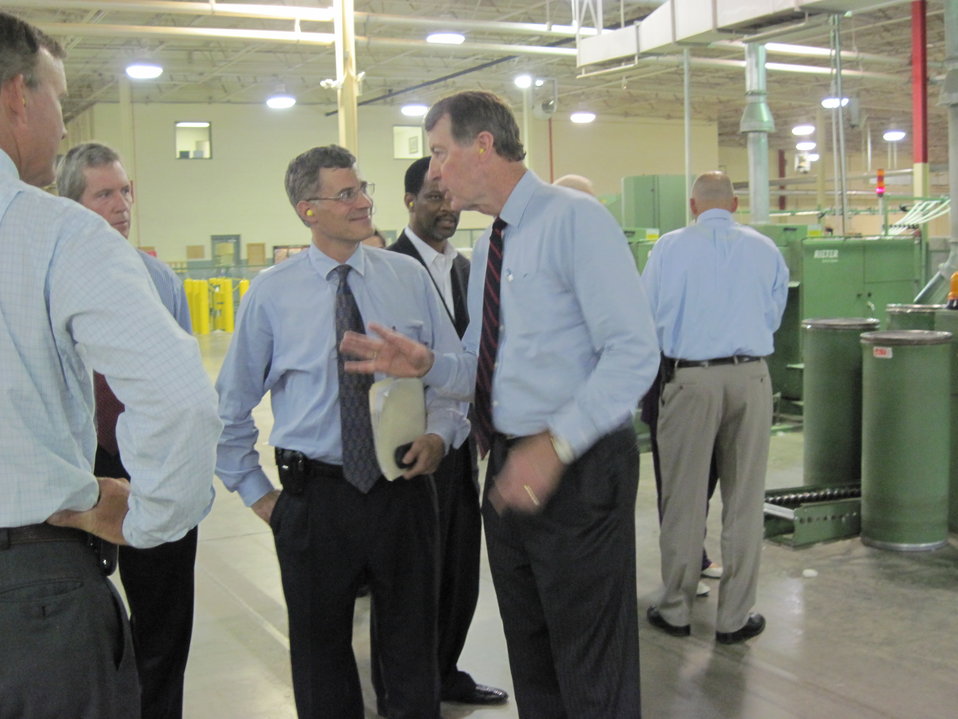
Krueger in NC, 7/12/10

Treasury Chief Economist and Assistant Secretary for Economic Policy Alan Krueger touring the newly re-opened Sanford, NC plant of Parkdale Mills with Congressman Bob Etheridge.